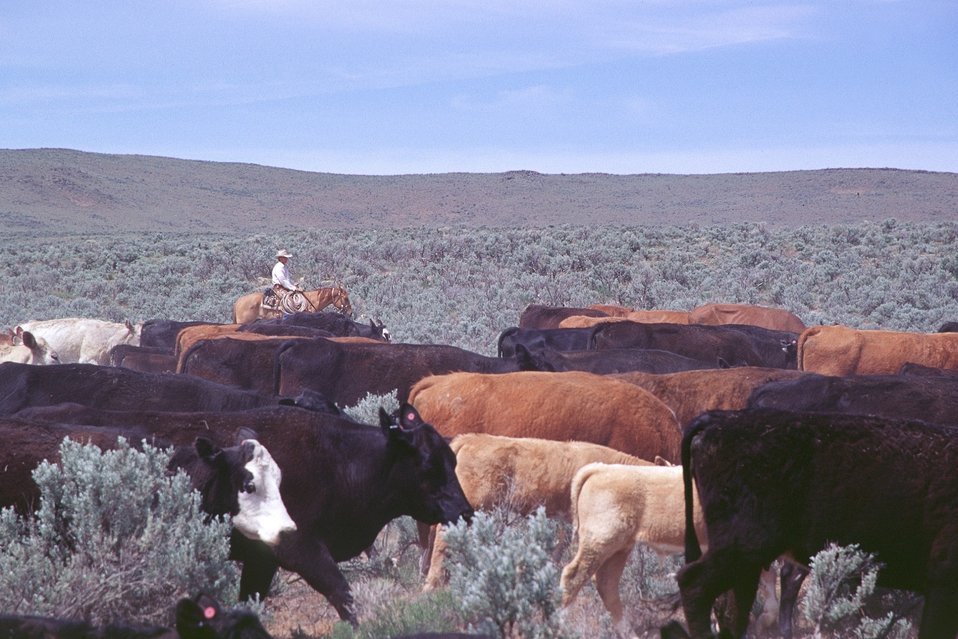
Immigrant Flats, Baker City RA. Herding cows.